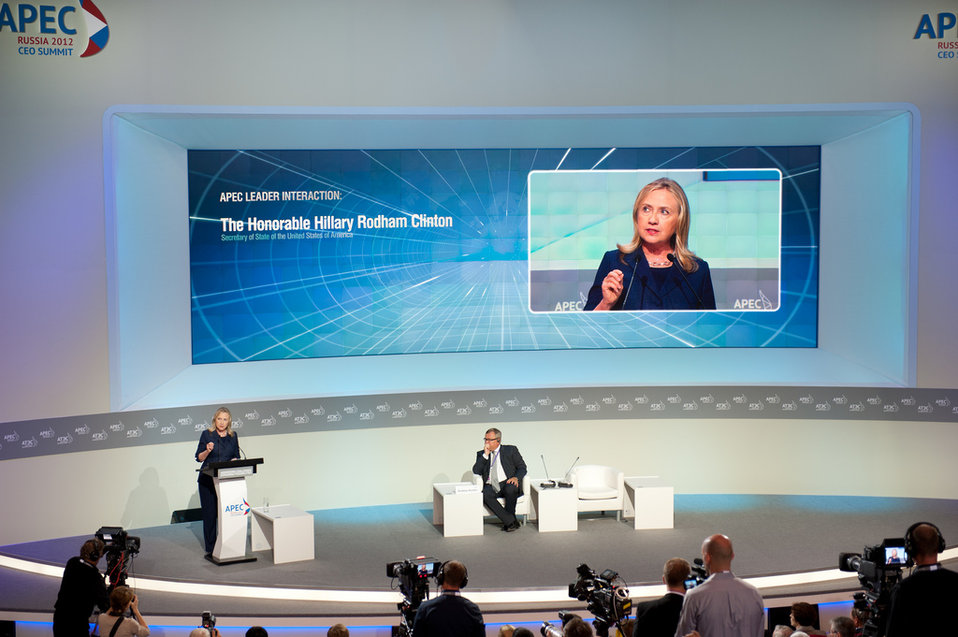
Secretary Clinton Speaks at the APEC CEO Summit

U.S. Secretary of State Hillary Rodham Clinton delivers remarks at the Asia-Pacific Economic Cooperation CEO Summit in Vladivostok, Russia, September 8, 2012.